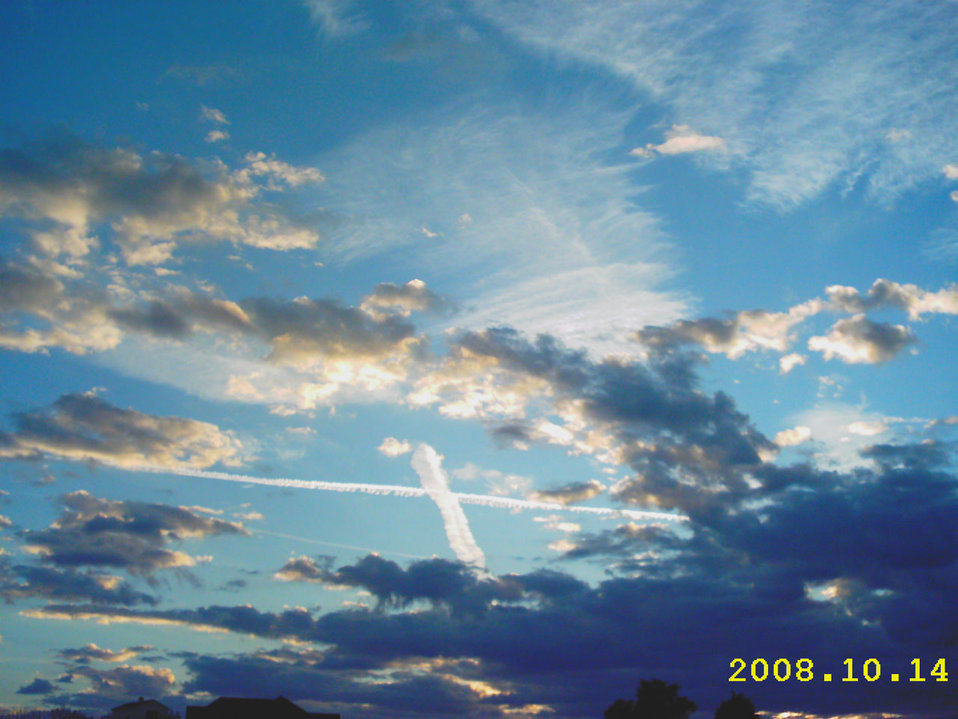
At the cross

Vapor trails of high altitude aircraft cross at just the right time.